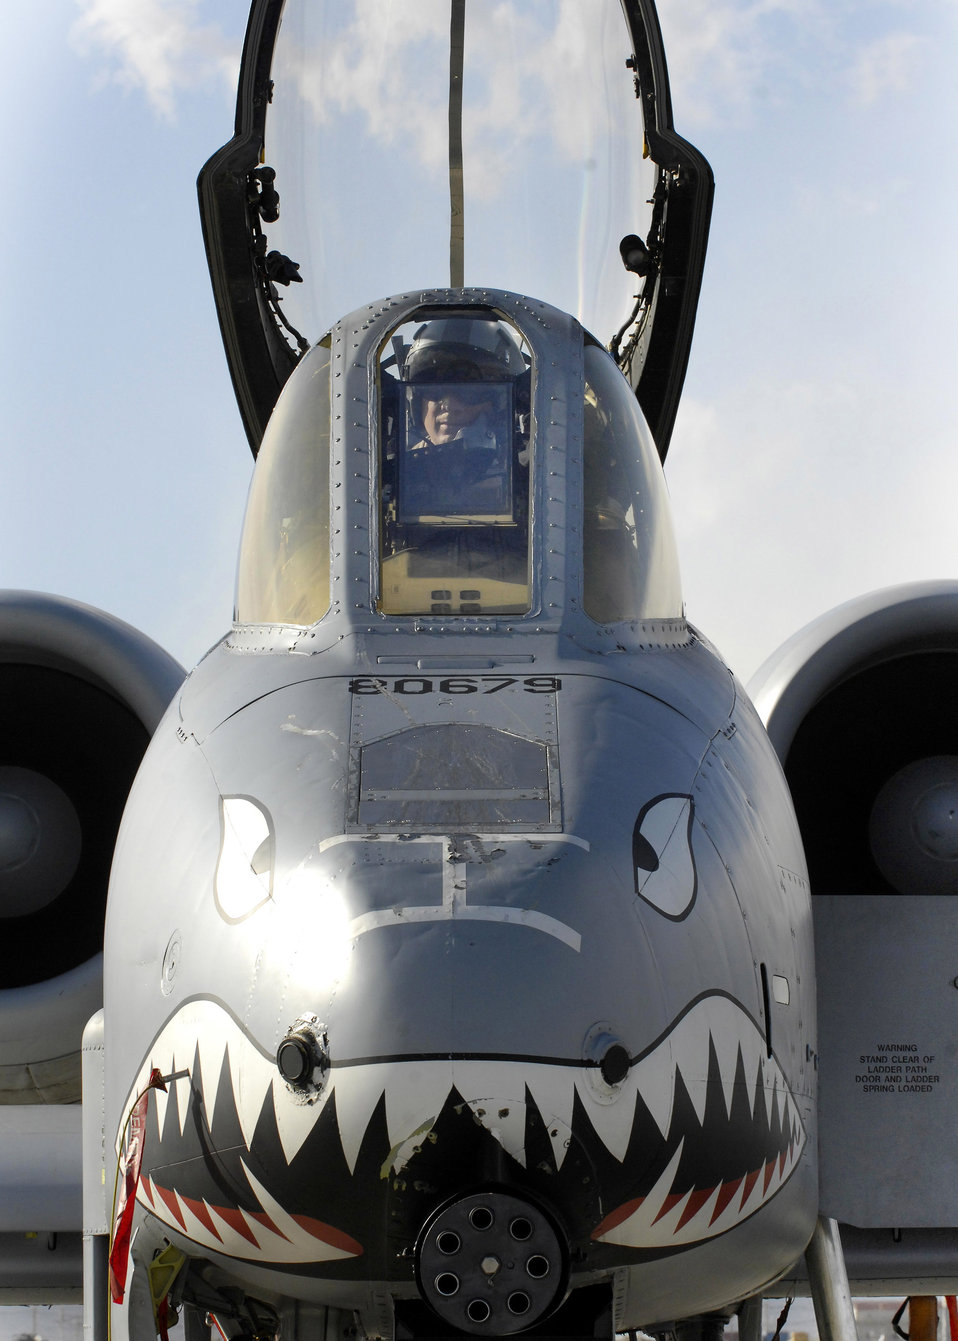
A-10 unit reaches 10,000-hour milestone

Lt. Col. Sam Milam prepares to disembark from an A-10 Thunderbolt II after competing a mission that broke the unit's 10,000th combat flight hour mark during a single deployment rotation Feb. 24 at Bagram Airfield, Afghanistan. Members of the 75th EFS arrived here in September for a four-month deployment, but was extended to six months. Colonel Milam is the 75th Expeditionary Fighter Squadron commander.